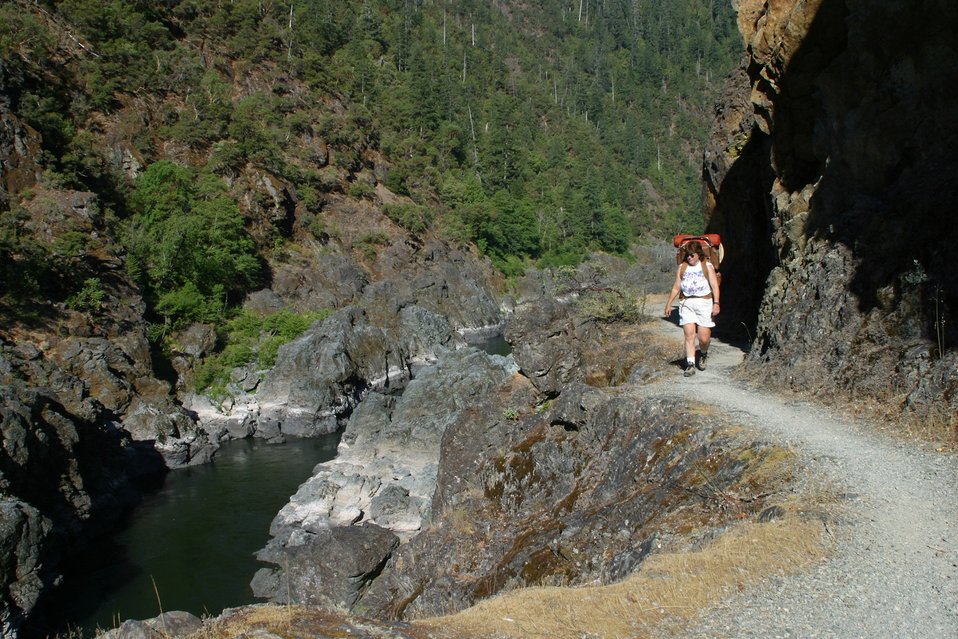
Hiking the Rogue River Trail between Mule Creek and Blossom Rapids.